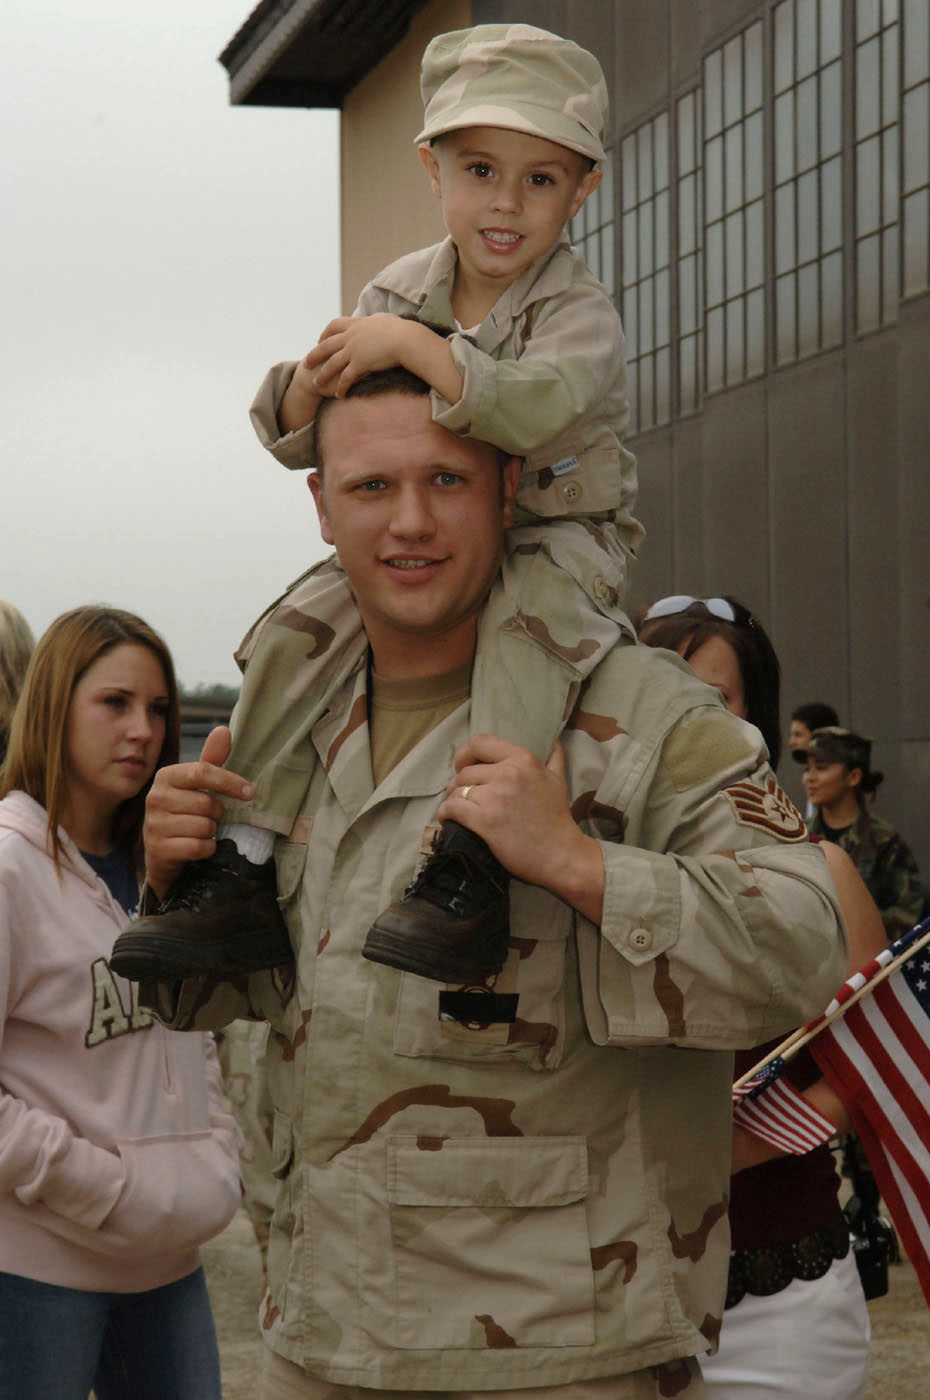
Moody welcomes SFS Airmen home for holidays

Staff Sgt. Clint Parks walks around with his son C.J. on his shoulders at the homecoming ceremony held for deployed security forces members Dec. 14 at Moody Air Force Base, Ga. More than 160 security forces members returned home just in time to spend the holidays with loved ones. Sergeant Parks is assigned to the 822nd Security Forces Squadron here.